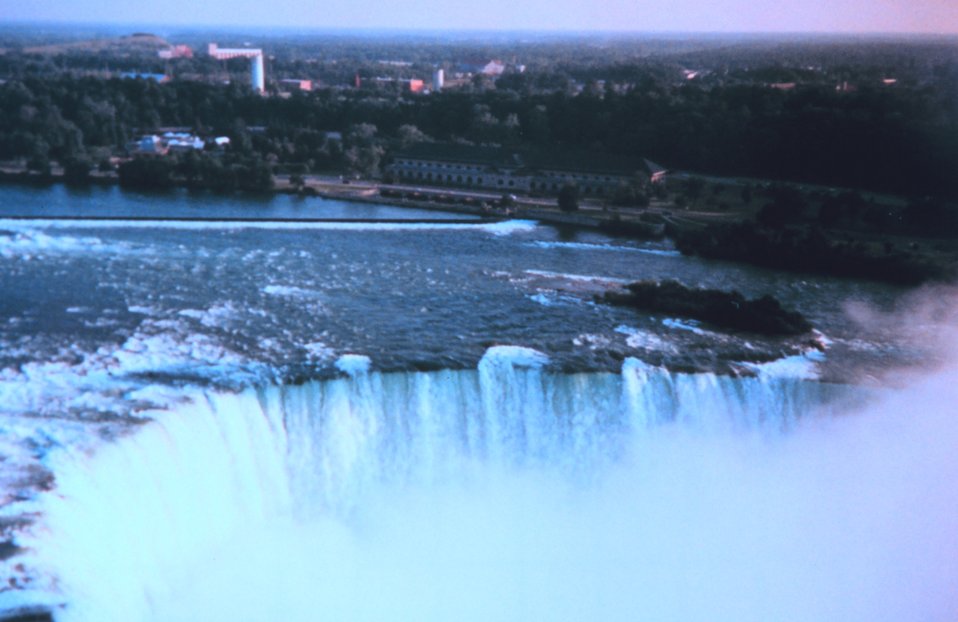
Niagara Falls as seen during Shoals Lidar survey of Niagara River.